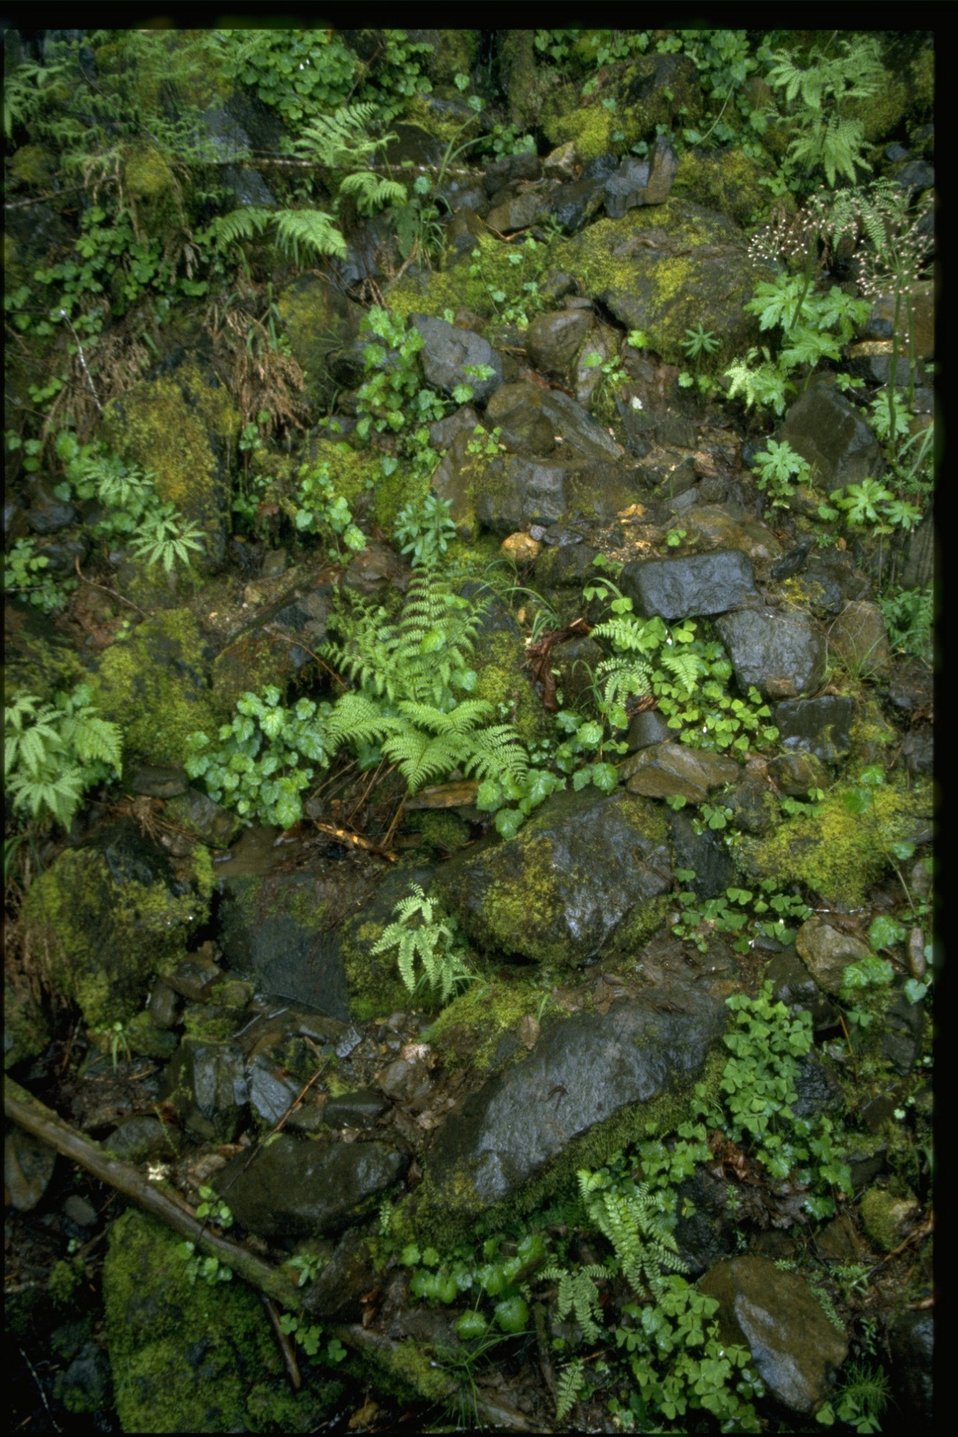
Medium shot of ferny cliff.